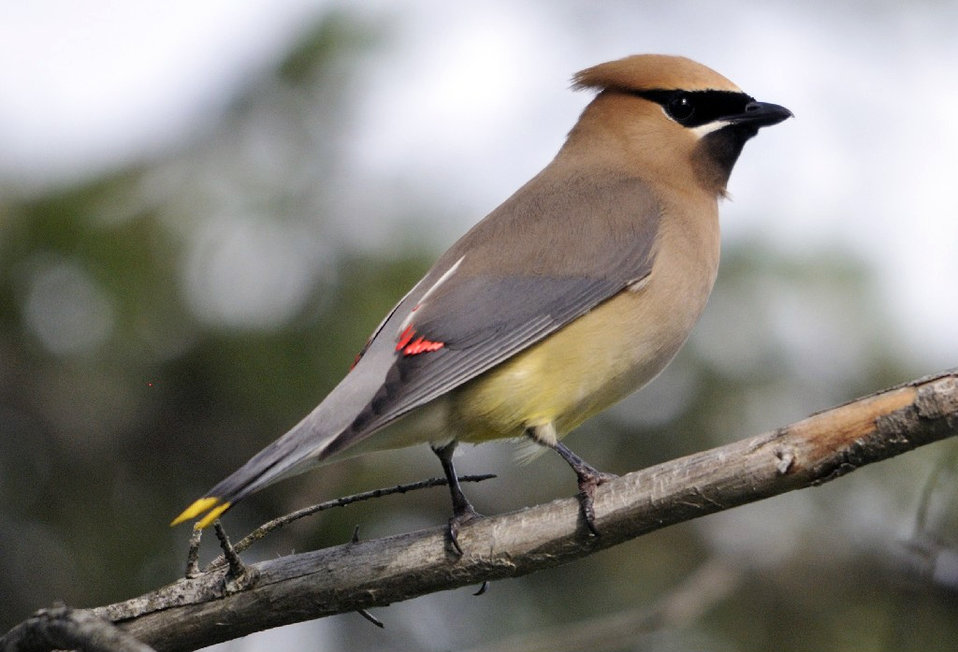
Photo of the week - Cedar waxwing (MA)

Photo of the Week - 07/06/11

Cedar Waxwing photographed at Hawley Bog, north of Hawley, MA, on 4 July 2011.